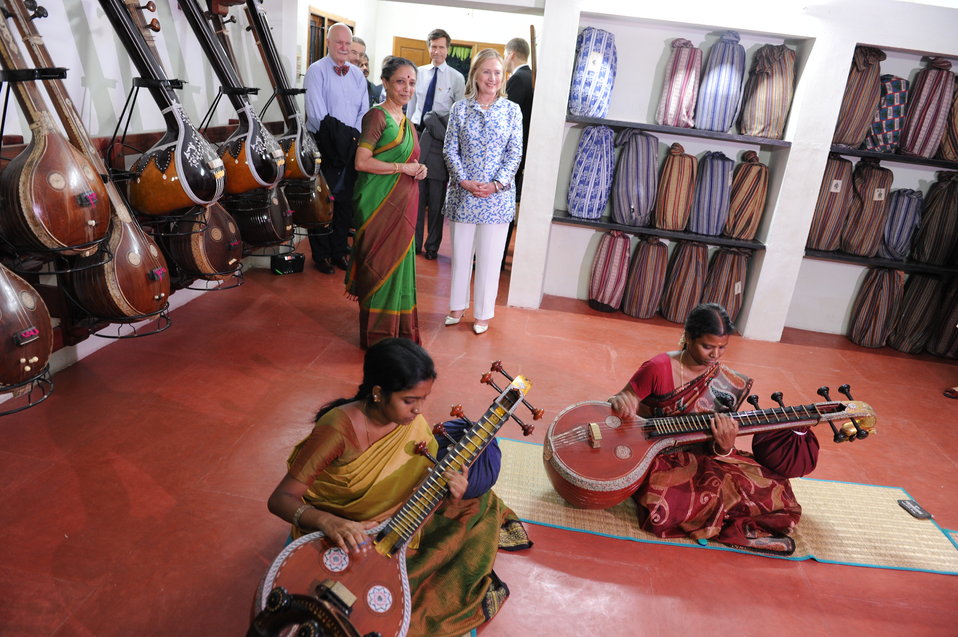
Secretary Clinton Visits a Music Classroom

U.S. Secretary of State Hillary Rodham Clinton visits a music classroom prior to watching a dance performance at the Kalakshetra Foundation in Chennai, India, on July 20, 2011. [Paul Cohn/ State Department photo]